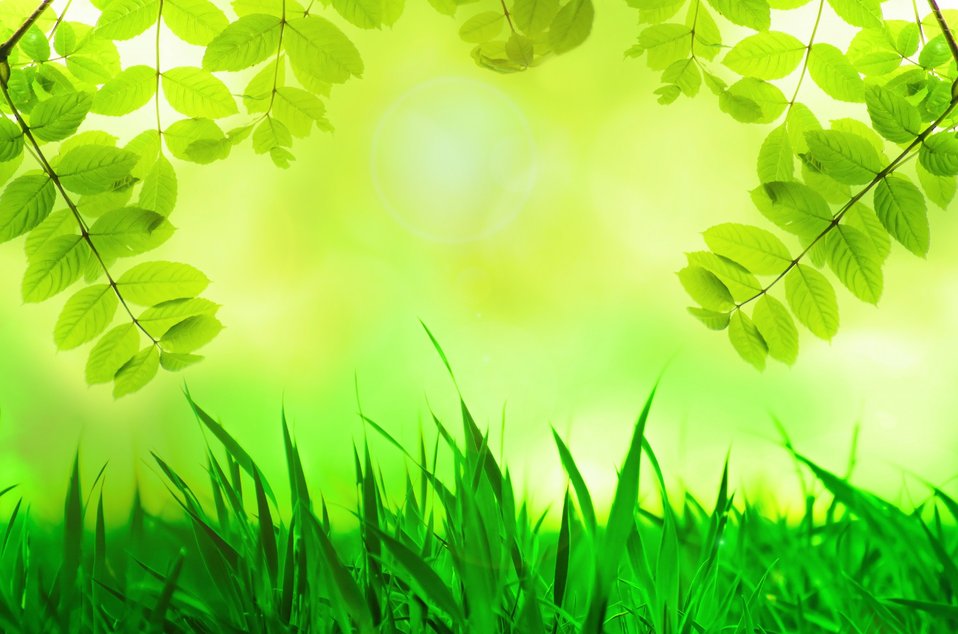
Natural green background.